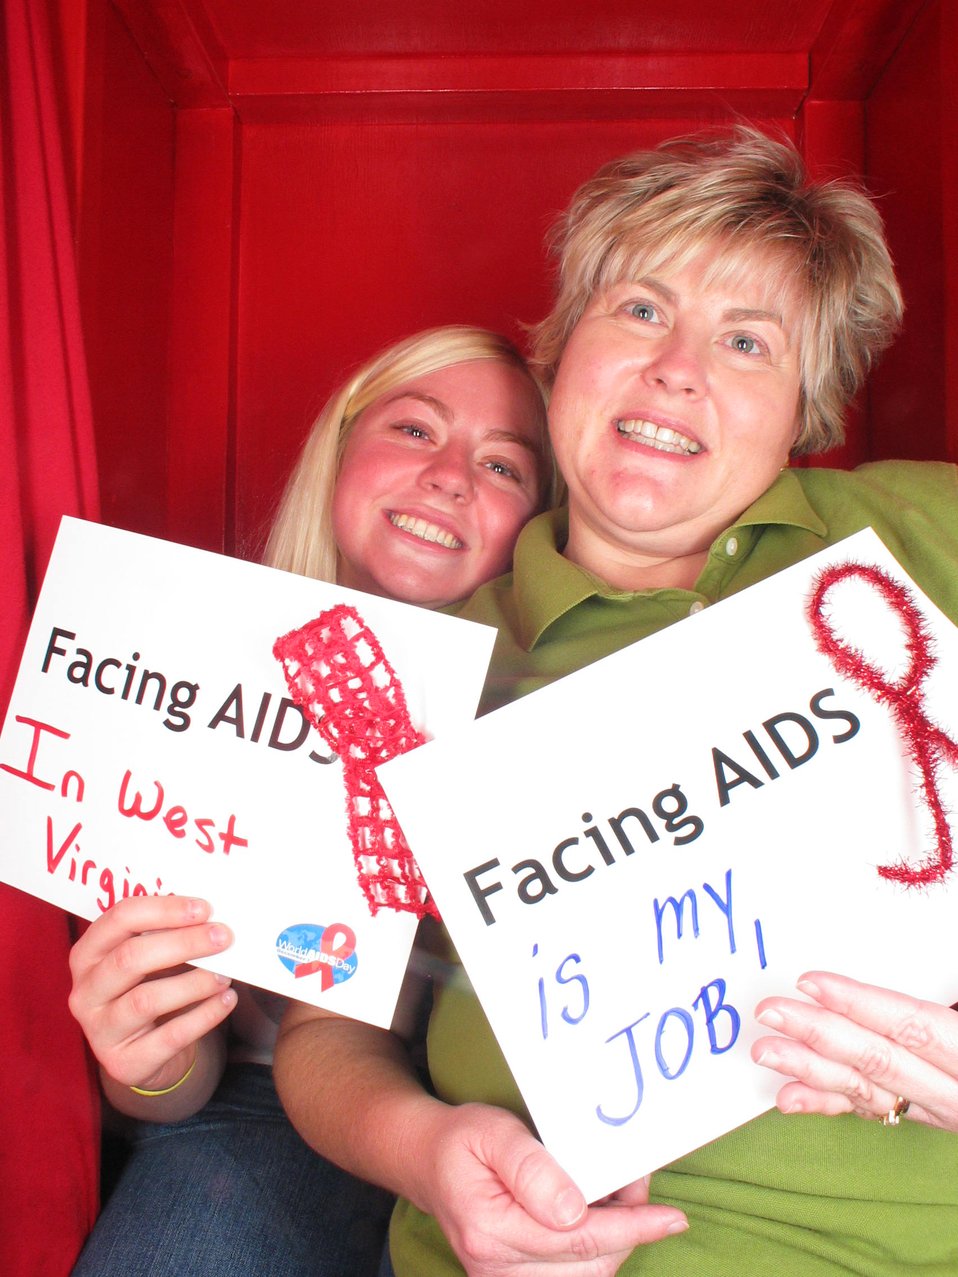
Facing AIDS in West Virginia. Facing AIDS is my job.